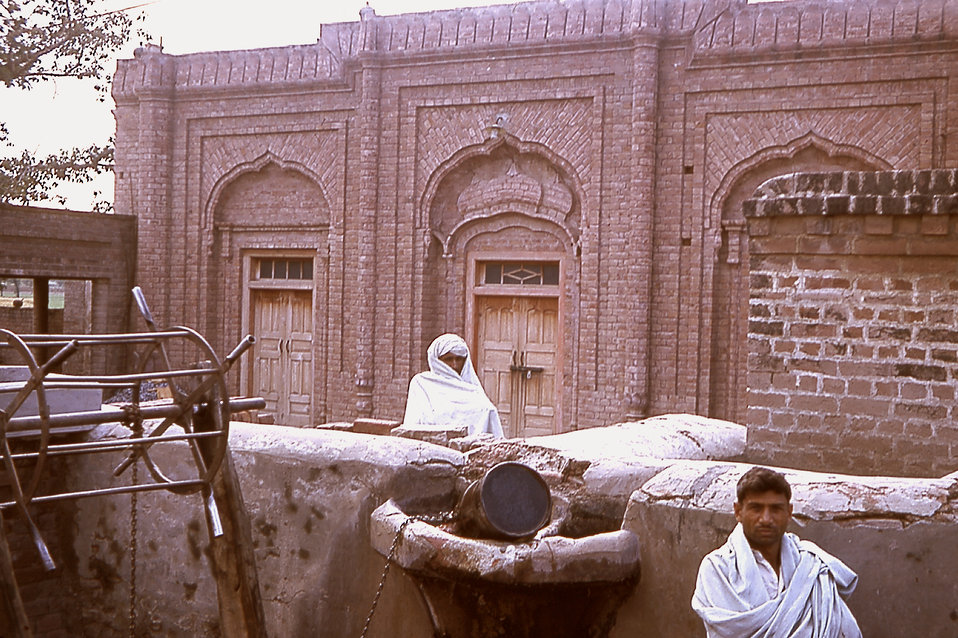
This is a 1964 photograph by Dr. Alex Langmuir taken in a village mosque in the state of Gujarat, India.